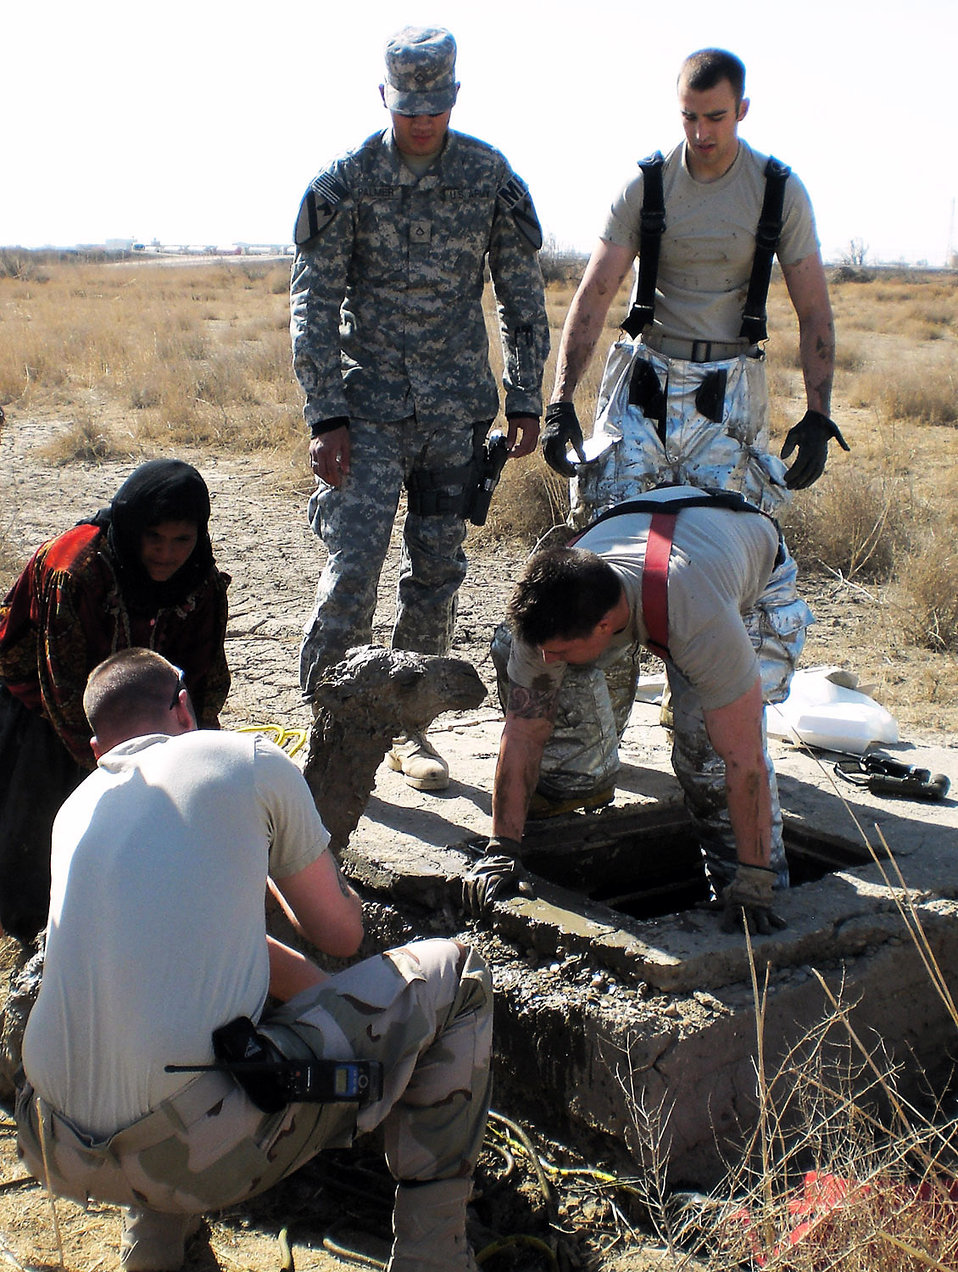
Air Force Firefighters Rescue Baby Camel Trapped in Manhole

Firefighters rescue a baby camel trapped in a manhole near Ali Base, Iraq, Feb. 9. The firefighters are with the 407th Expeditionary Civil Engineer Squadron.